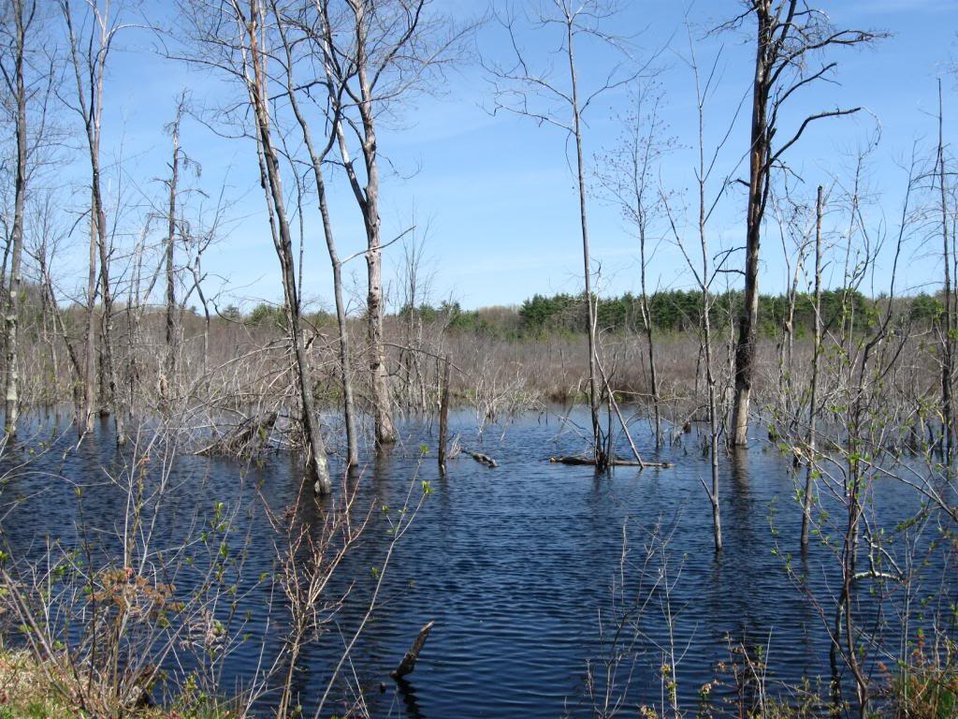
Assabet River National Wildlife Refuge.

Credit: Zachary Cava/USFWS

Assabet River National Wildlife Refuge is part of the Eastern Massachusetts National Wildlife Refuge Complex.